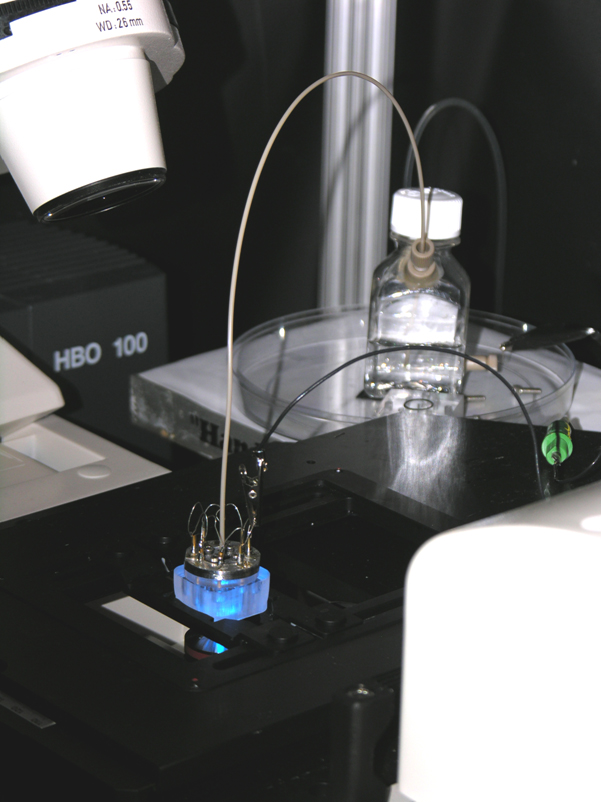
Lab-On-A-Chip, GEMBE

GEMBE chemical separation device prototype in use.